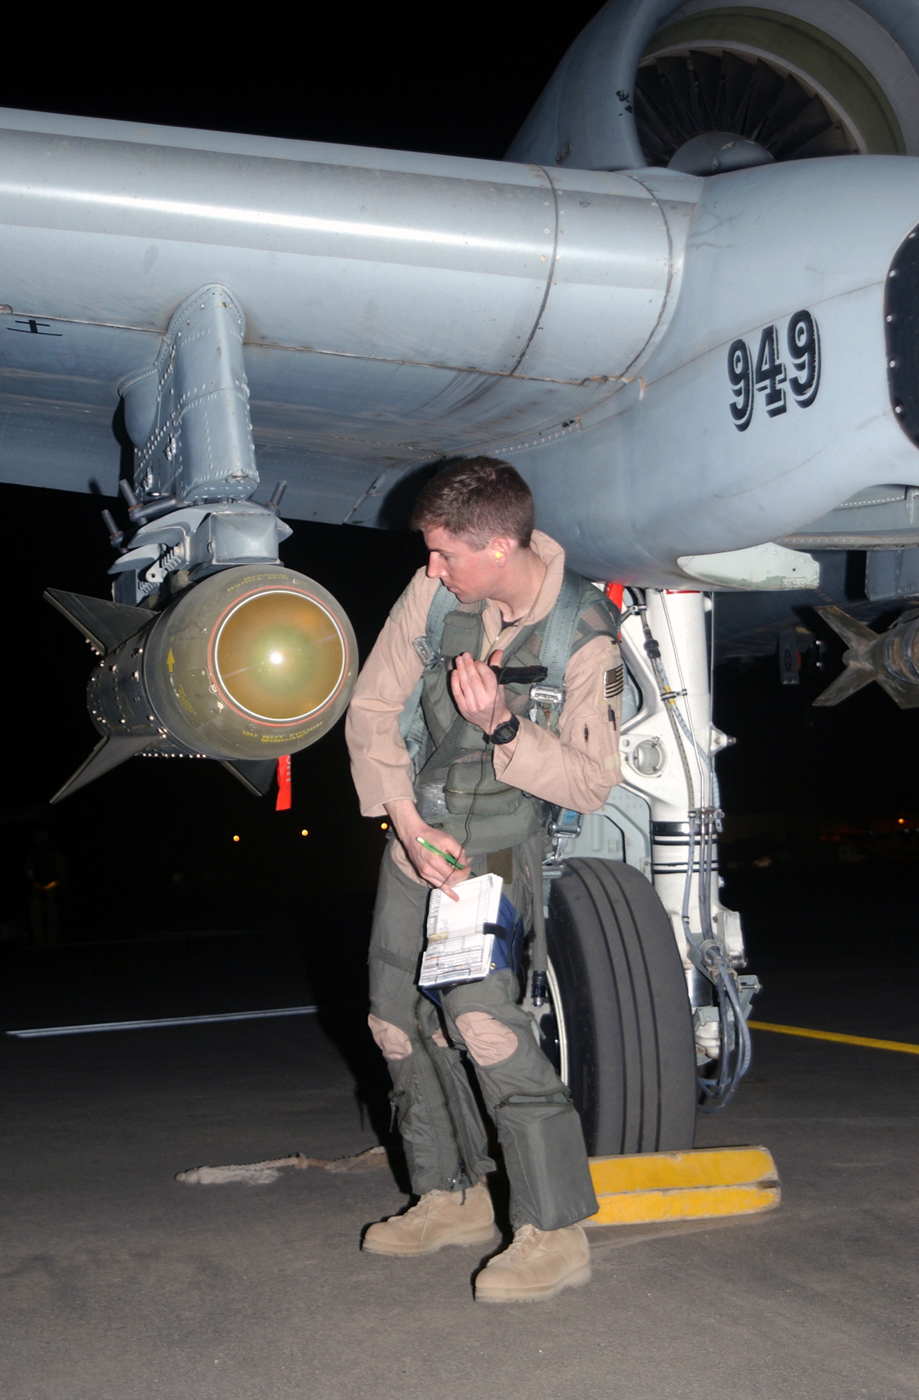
Cheal

1990's -- OPERATION IRAQI FREEDOM -- 1st Lt. William